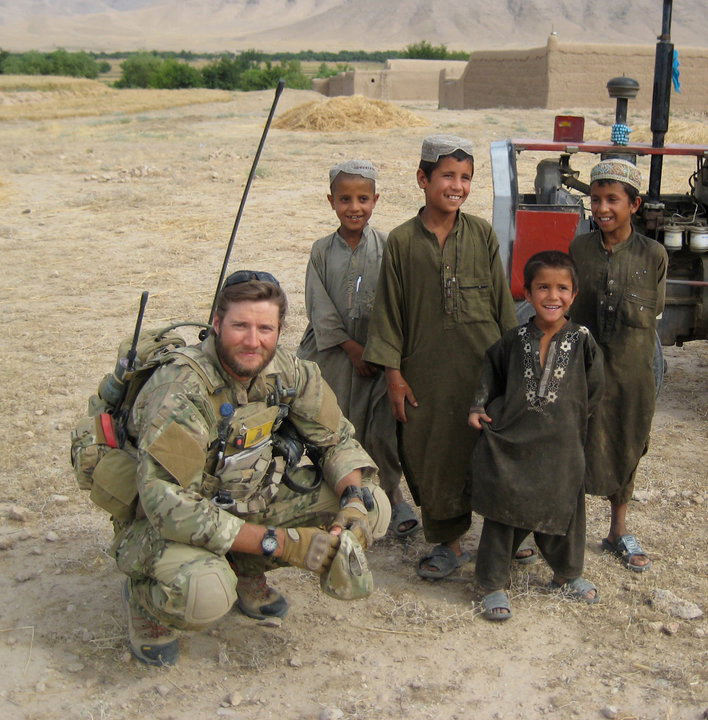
Airman dies

Senior Airman Mark Forester was killed in Uruzgan province, Afghanistan, when his special forces unit came under attack Sept. 29, 2010. Airman Forester was assigned to the 21st Special Tactics Squadron at Pope Air Force Base, N.C.